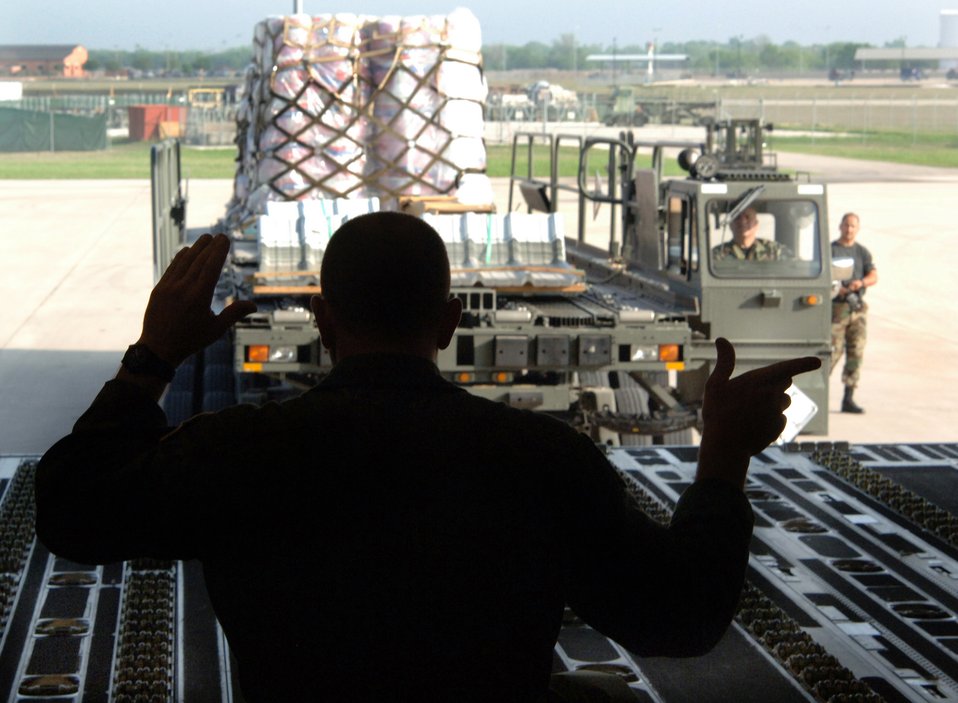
Reserve aircrew helps fight war on drugs

Master Sgt. Shawn Delp signals the driver to line up cargo for loading in preparation for a mission to Saint Lucia Friday, April 7, 2006. The aircrew was delivering construction materials and Reserve civil engineers who are building an operations center and barracks for the police force in support of Saint Lucia's counter-drug operations. Sergeant Delp is with the 300th Airlift Squadron at Charleston Air Force Base, S.C.